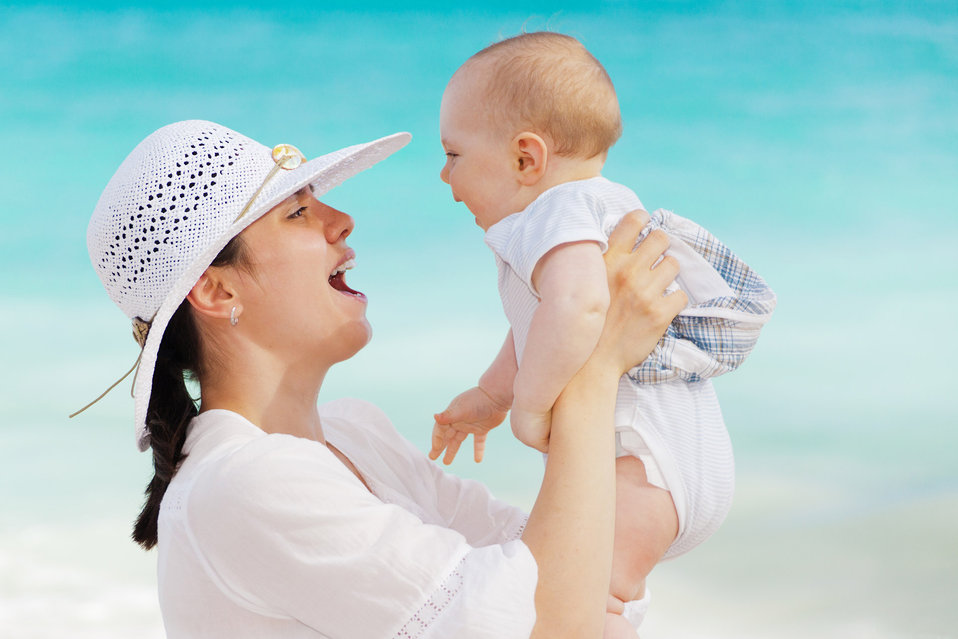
Mom and baby having fun on the beach.